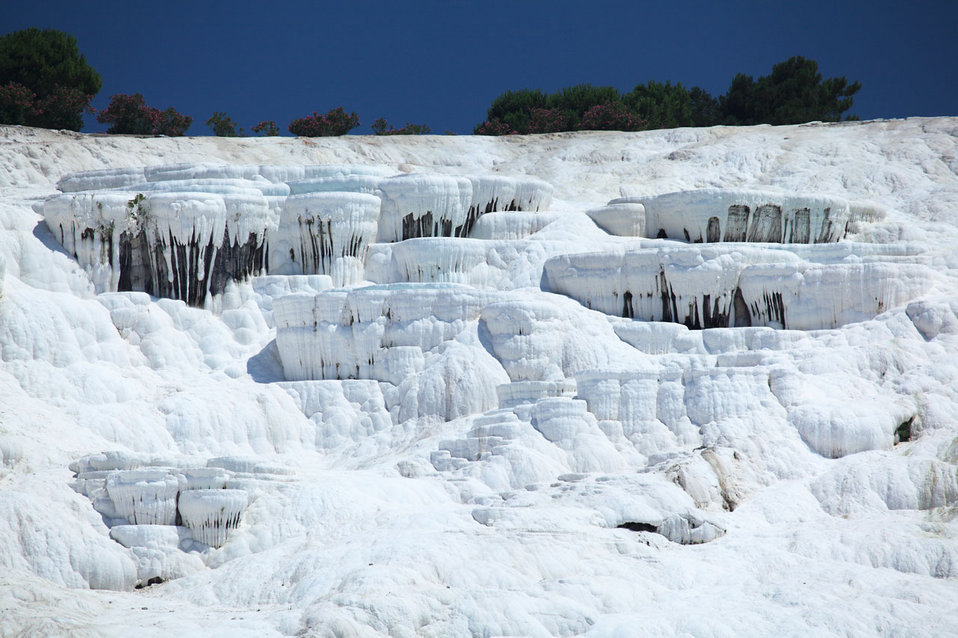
Pamukkale - a natural site in turkey. hot springs and travertines, terraces of carbonate minerals left by the flowing water..